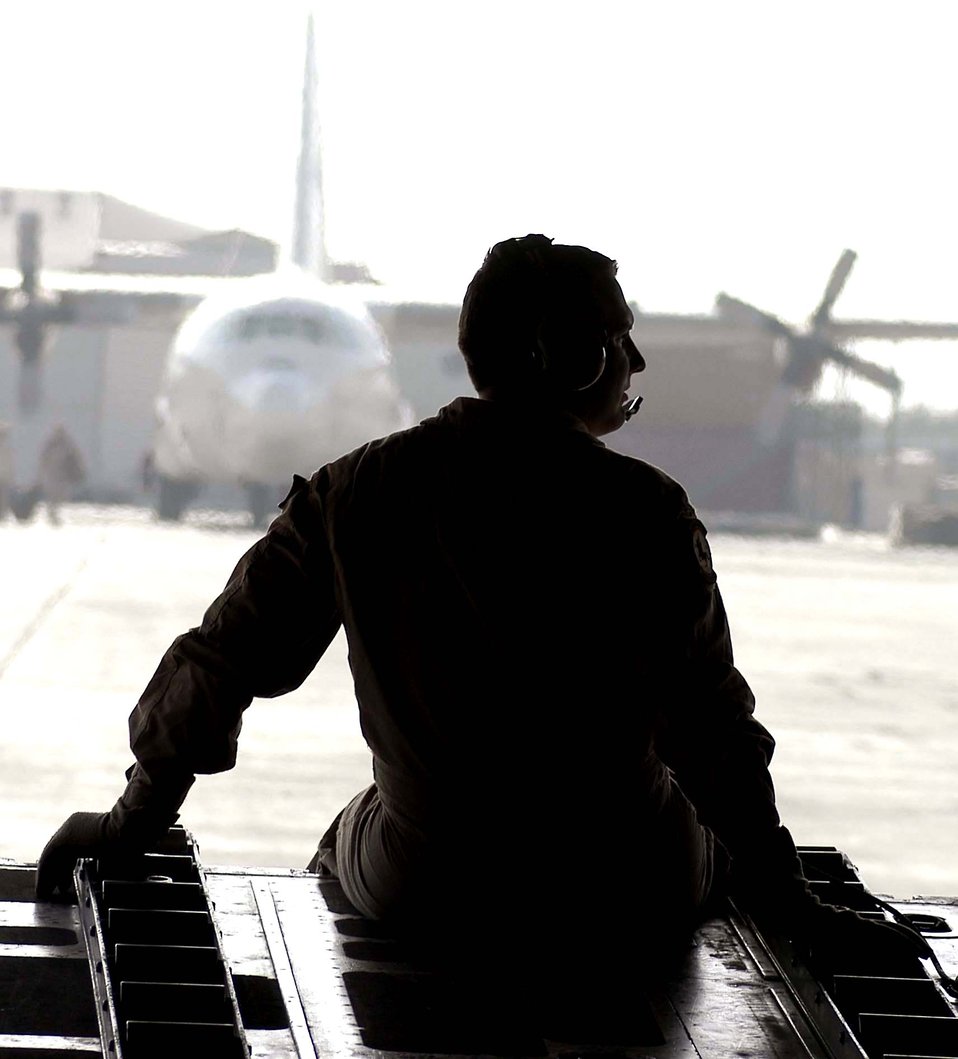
Looking back

Staff Sgt. David Shively sits on the ramp of a C-130 Hercules as it taxis to a parking spot at the Kabul International Airport, Afghanistan, on Aug. 4. Sergeant Shively is deployed to the 774th Expeditionary Airlift Squadron at Bagram Air Base, Afghanistan, in support of Operation Enduring Freedom. He is a C-130 loadmaster from the Tennessee Air National Guard. Hercules cargo aircraft deliver troops and supplies throughout Afghanistan in support of U.S. and coalition forces.